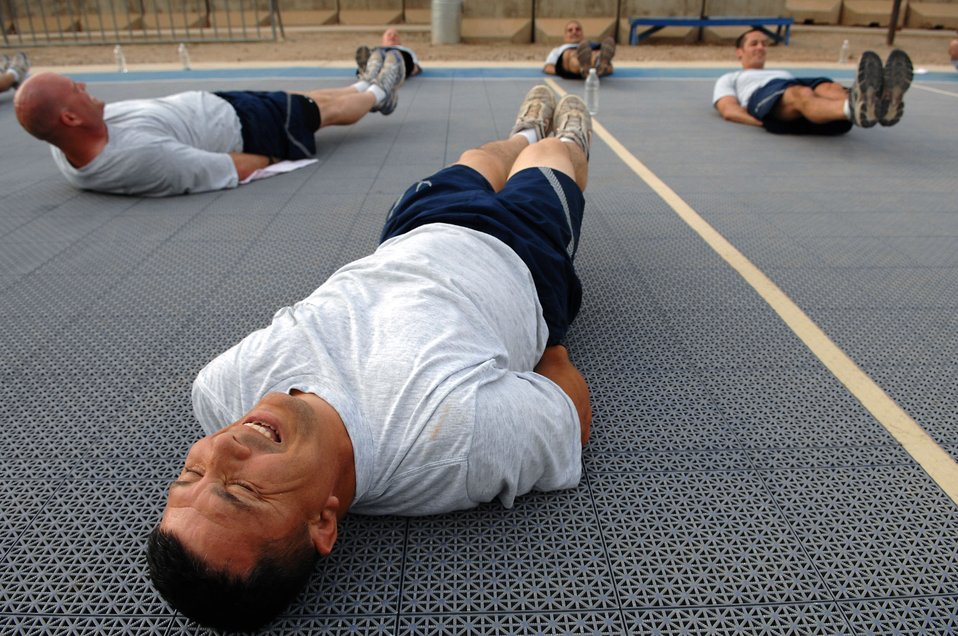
Horsepower

Tech. Sgt. Antonio Garcia performs leg lifts June 3 at Balad Air Base, Iraq. Members of the 557th Expeditionary RED HORSE Squadron meet early each morning to workout as a unit, promote the Air Force's fit-to-fight lifestyle and build morale. The 557th ERHS staff provides direct support to the Army's 20th Engineer Brigade for large-scale construction projects throughout Iraq. Sergeant Garcia is 557th ERHS member deployed from Lackland Air Force Base, Texas.